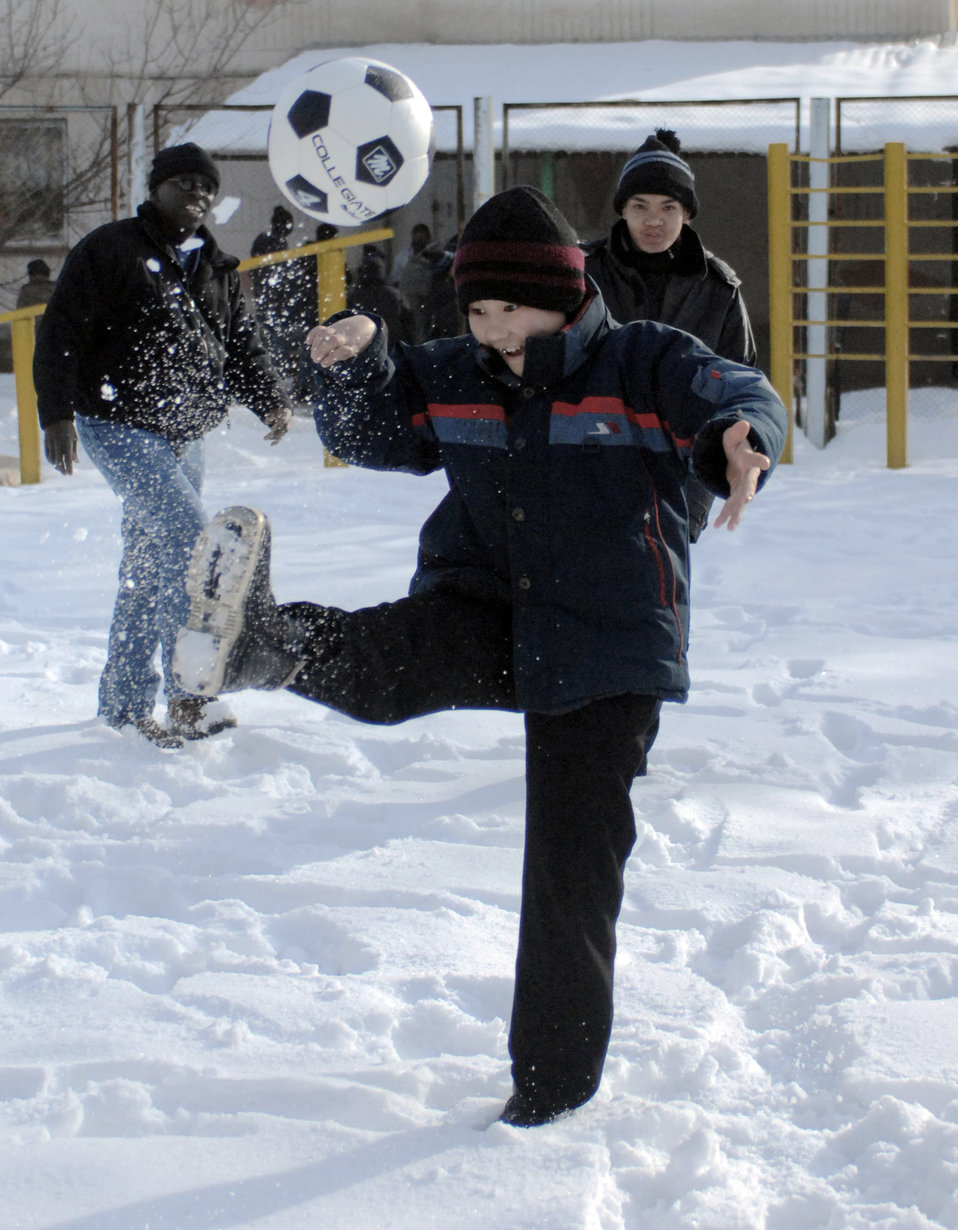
Manas Airmen make memorable bonds with Kyrgyz children

A young boy shows off his soccer skills to Staff Sgt. Milbert Bourgeois Jan. 11 at the Belovodosky orphanage north of Bishkek, Kyrgyzstan. Airmen from nearby Manas Air Base visit the orphanage frequently to share friendship and donate toys as well as clothing, blankets, diapers and toiletries. Sergeant Bourgeois is a Nevada Air National Guardsman deployed to the 376th Expeditionary Security Forces Squadron here.